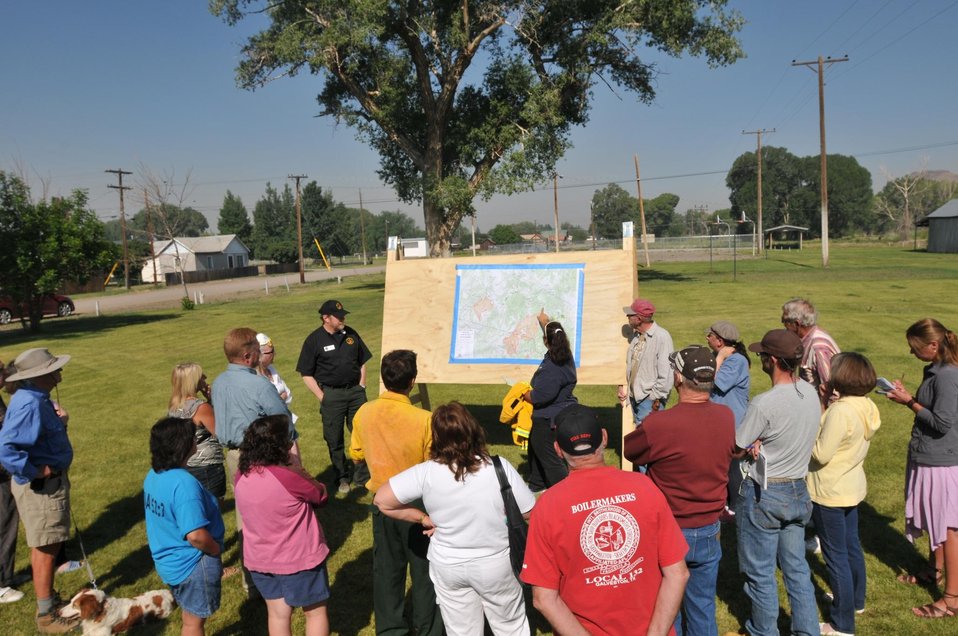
Incident Commander provides update on the West Fork Complex Fires to local residents. The West Fork Complex Fire is made of four fires, Papoose Fire, East Zone of West Fork Fire, West Zone of West Fork Fire, and Windy Pass Fire. The fires located in the vicinity of Pagosa Springs, CO began on Jun. 05, 2013 by lightning strikes. The multiple fires have consumed approximately 109,615 acres.